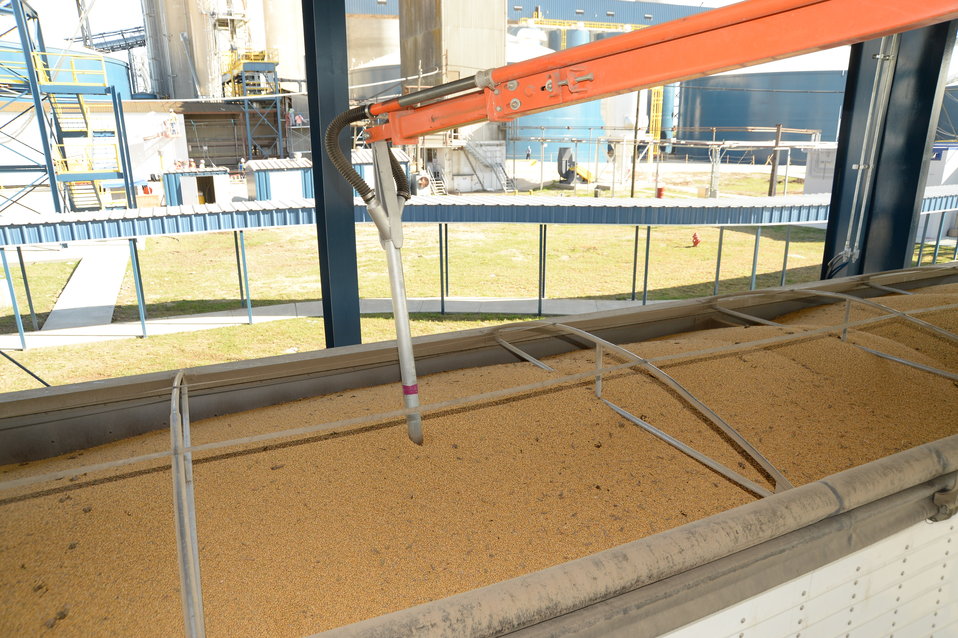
A sample of grain is removed from a barge for testing at the U.S. Department of Agriculture’s (USDA) Grain Inspection, Packers and Stockyards Administration (GIPSA) Federal Grain Inspection Service (FGIS) laboratory in New Orleans, LA on Tuesday, Nov. 19, 2013.